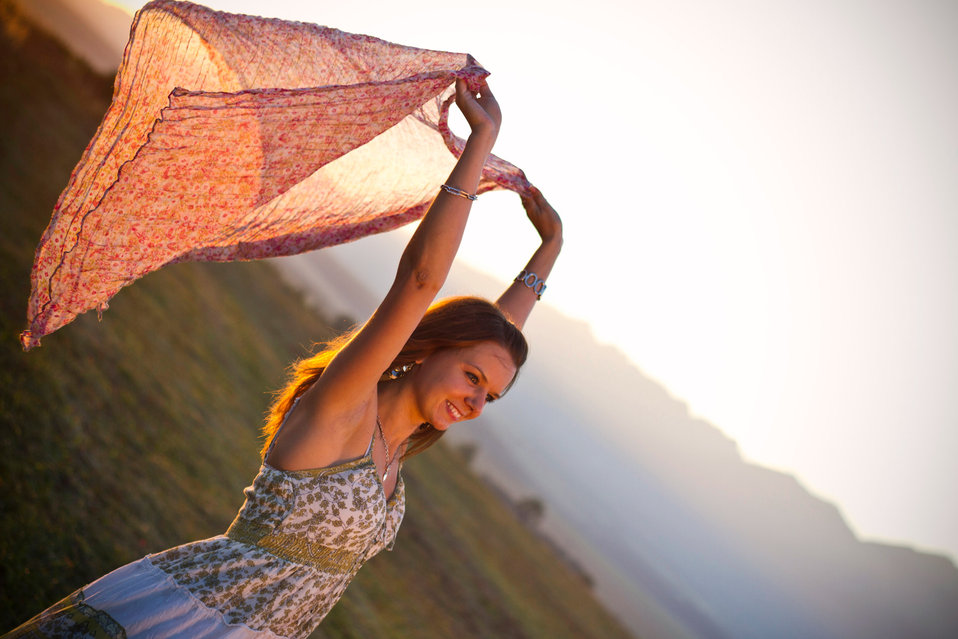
Happy girl with the scarf.